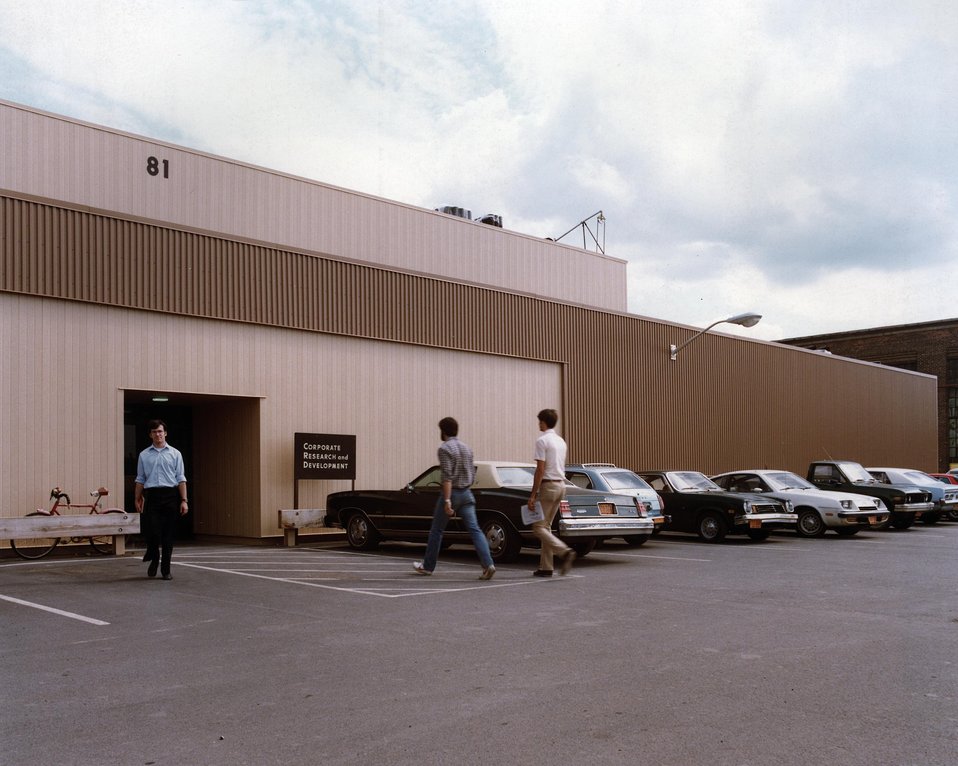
GENERAL ELECTRIC CONDUCTS MOLTEN CARBONATE FUEL CELL RE- SEARCH IN BUILDING 81 AT ITS SCHENECTADY, NY PLANT.

A NEWER METHOD OF COMMERCIALLY GENERATING ELECTRICITY IS BEING DEVELOPED BY GENERAL ELECTRIC. FUEL CELLS, BATTERY-LIKE GENERATORS, PRODUCE ELECTRICITY BY AN ELECTROCHEMICAL RE- ACTION. UNLIKE THE BATTERY, THE FUEL CELL HAS A CONSTANT SOURCE OF FUEL. IN THIS PROGRAM, G.E. IS PLANNING TO USE GASIFIED COAL TO POWER THE CELLS. THIS HYDROGEN-RICH FUEL IS FED INTO ONE SIDE OF THE CELL WHILE OXYGEN IS FED INTO THE OTHER. THIS CREATES A NEGATIVE CHARGE AT THE HYDROGEN (ANODE) SIDE AND A POSITIVE CHARGE AT THE OXYGEN (CATHODE) SIDE. THE ATTRACTION OF THESE CHARGES CAUSES THE ELECTRONS TO FLOW THROUGH THE MOLTEN CARBONATE ELECTROLYTE. THIS MOVEMENT OF THE ELECTRONS CREATES THE ELECTRICITY. BECAUSE THE MOLTEN CARBONATE FUEL CELL HAS A HIGH OPERATING TEMPERATURE, IT CREATES EXCESS HEAT WHICH CAN BE USED TO POWER OTHER ELECTRIC GENERATORS.